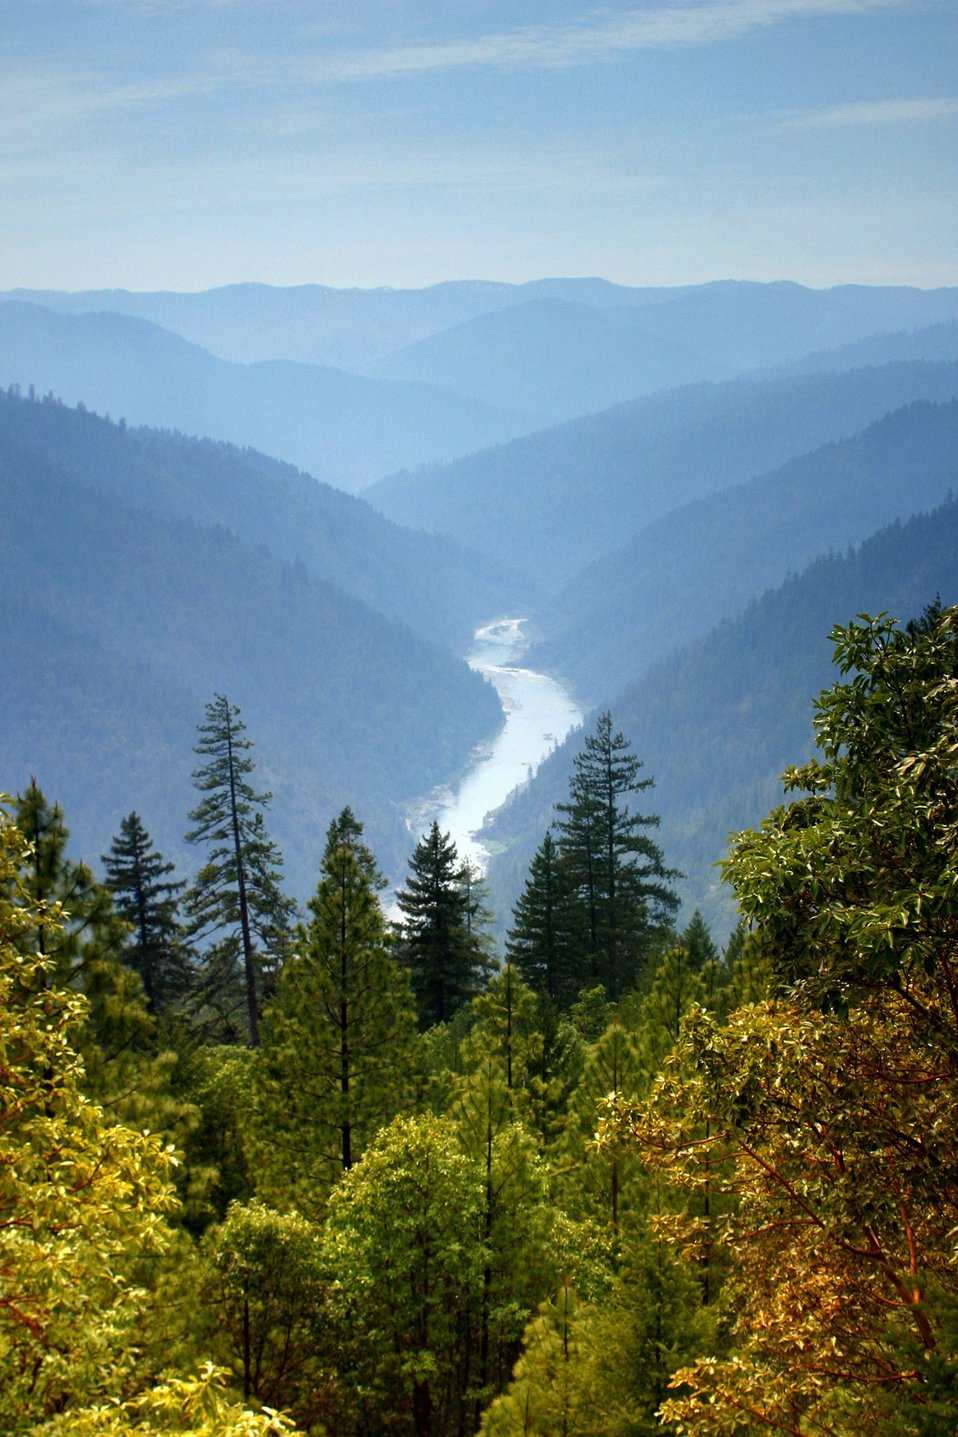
Wild section of the Rogue River from Grave Creek to Foster Bar May 19 to May 22.